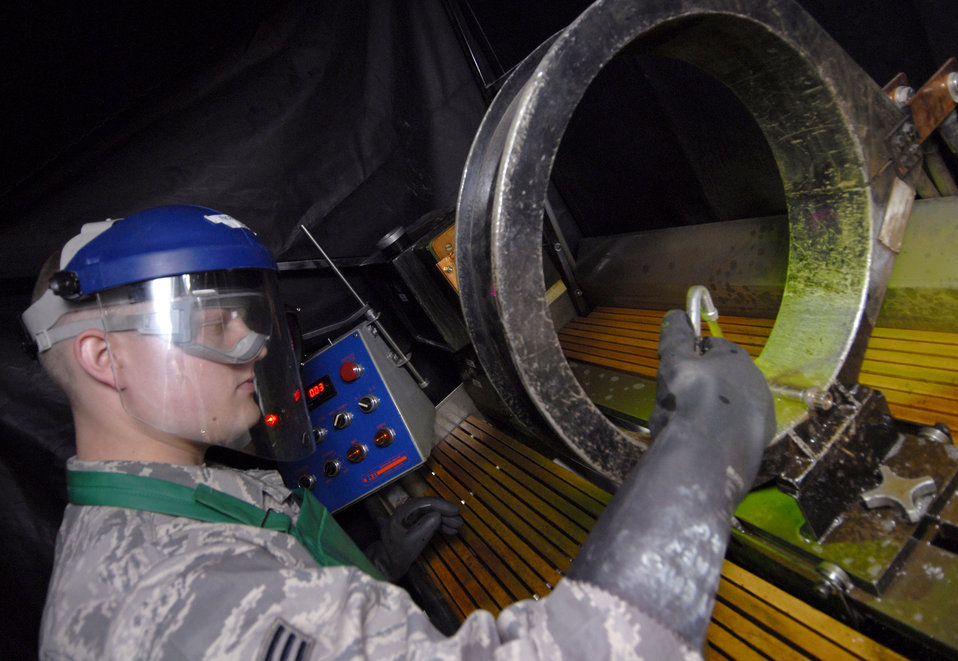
Hunting for hidden damage

Senior Airman Tyler Koonst applies a magnetic particle bath to a bolt from a main landing wheel in order to search for cracks or defects May 14 at an air base in Southwest Asia. The non-destructive inspection team inspects aircraft parts for defects or damage. Airman Koonst is assigned to the 379th Expeditionary Maintenance Squadron. He is from Belle Plaine, Minn. and is deployed from the 934th Airlift Wing at Minneapolis-St. Paul Air Reserve Station, Minn.